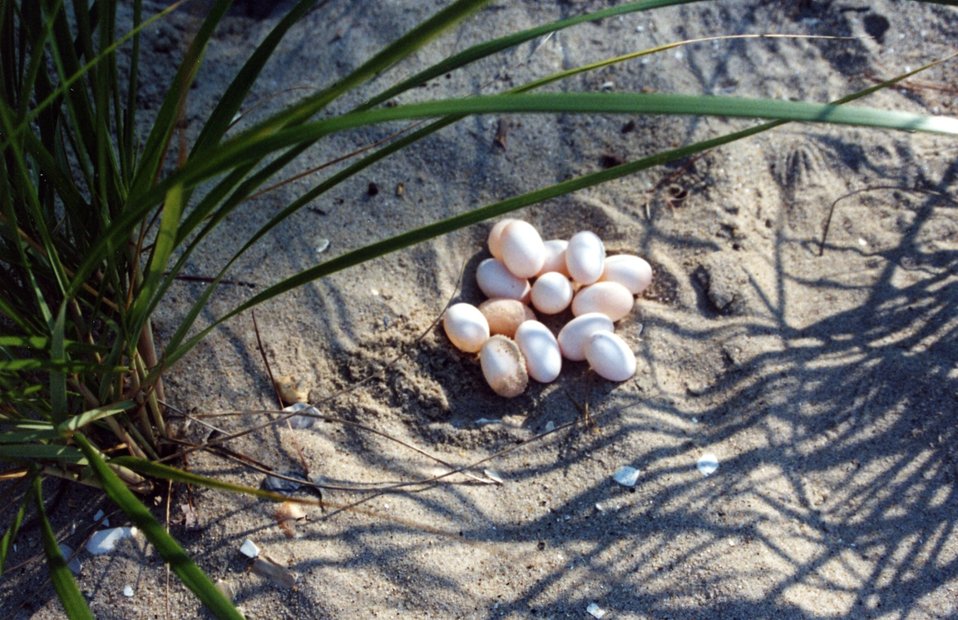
14 unhatched diamondback terrapin eggs in a sandy soil nest.